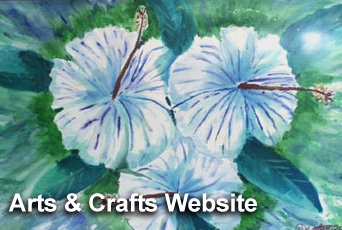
Air Force Services launches arts and crafts Web site

U. S. Air Force Services now has an official website for its arts and crafts program. The Web site, www.af-artcrafts.com, is a resource for arts and crafts customers to find information on local base centers as well as tips for creative projects and auto hobby.